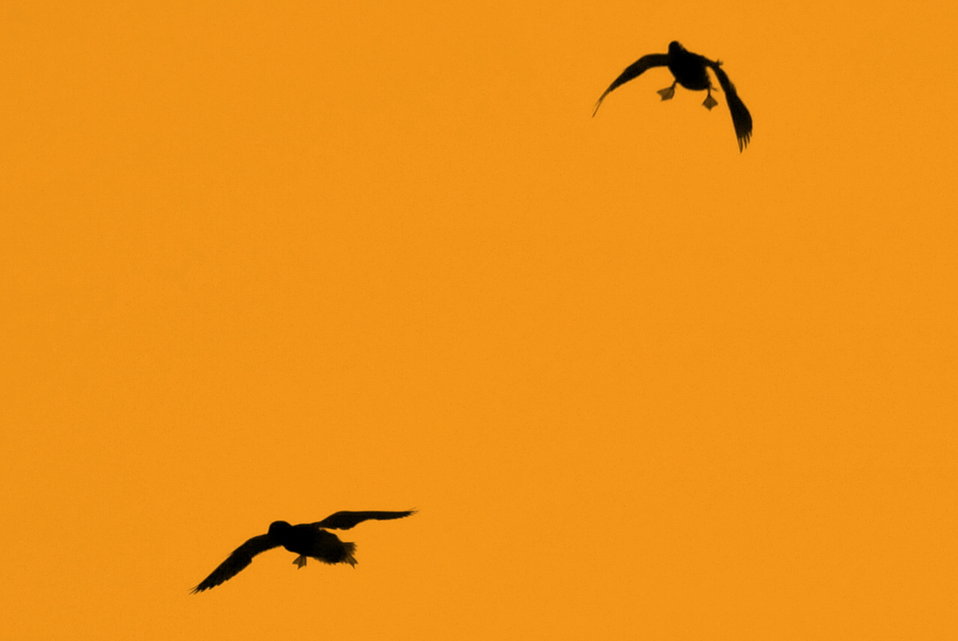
Mallards dropping in to a prairie pothole at sunset Sand Lake WMD